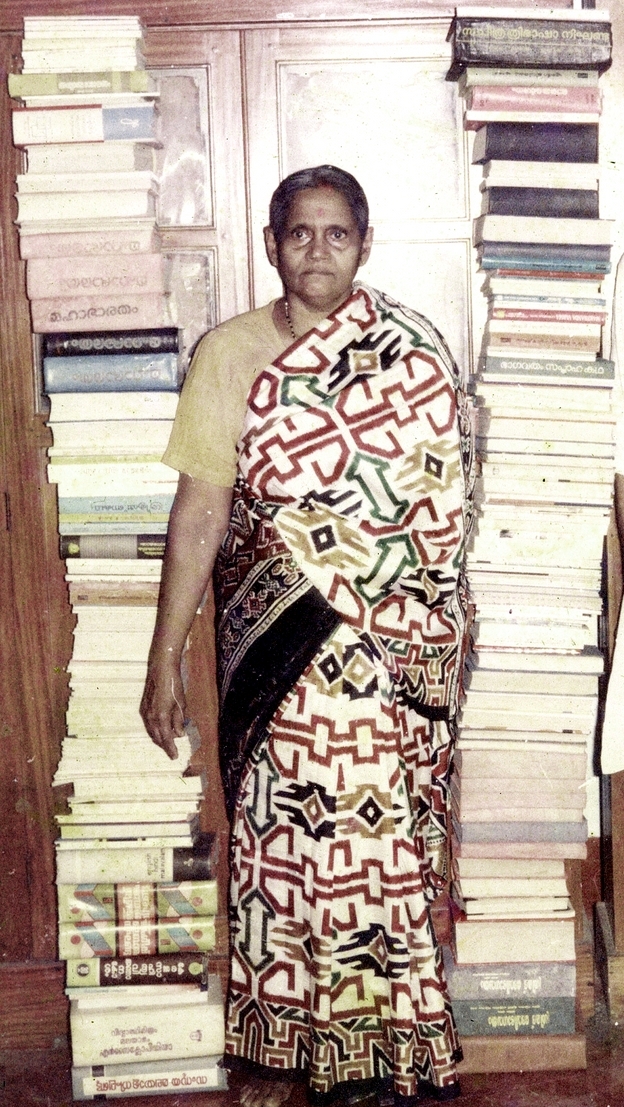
മലയാളം: R. Leela Devi along with the books published along with V. Balakrishnan